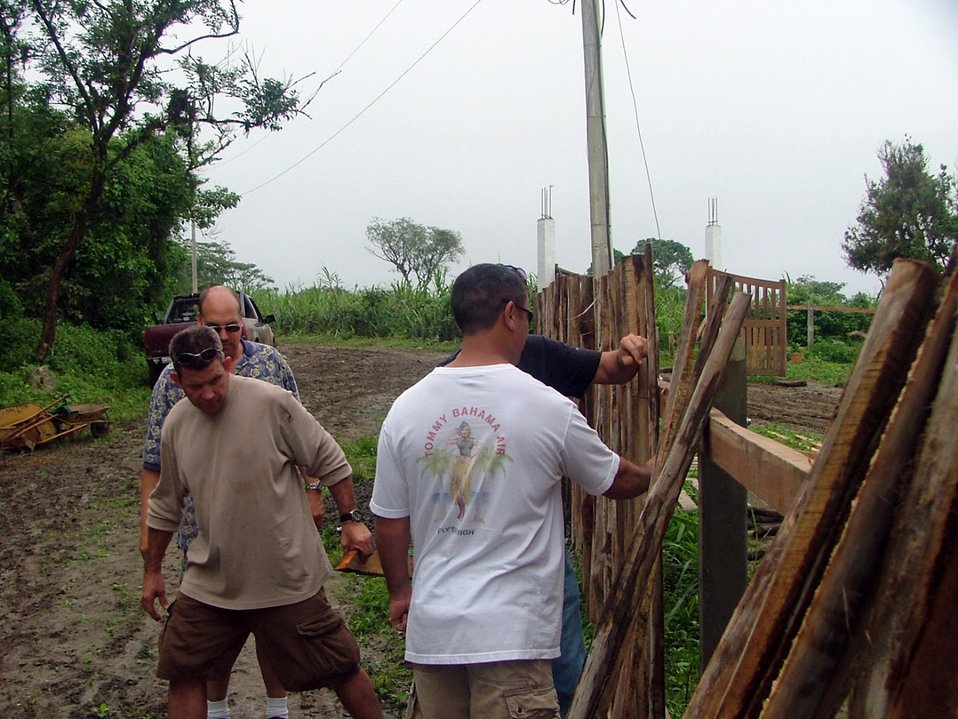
Airman support local community at Manta FOL

Maj Scott Griesman, Maj Mark Anderson and Capt Ernie Meeks, and SMSgt Duncan Hannigan work together, along with the other Manta FOL volunteers, to build a fence from scratch at Montanita Verde Orphanage.